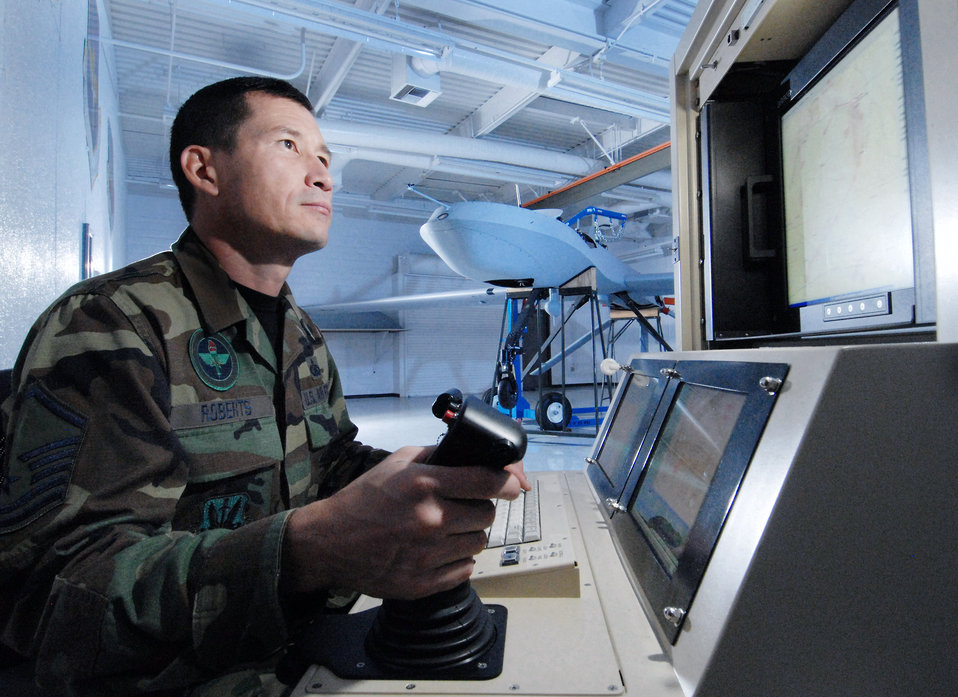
Predator maintenance

Master Sgt. Fred Roberts, an instructor with Field Training Detachment 26 of the California Air National Guard's 163rd Maintenance Group, uses a maintenance interface station Oct. 15 to check an MQ-1 Predator unmanned aircraft at March Air Reserve Base, Calif. Airmen with Det. 26 train active duty, Reserve and Air National Guard personnel on Predator maintenance operations.